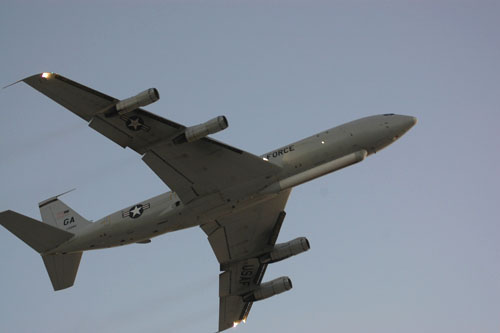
Aug. 17 airpower summary: JSTARS provide ground surveillance

An E-6B Joint Surveillance Target Attack Radar System, or JSTARS, takes to the skies, embarking on another mission into the area of responsibility. JSTARS is an airborne battle management, command and control, intelligence, surveillance and reconnaissance platform. Its primary mission is to provide theater ground and air commanders with ground surveillance to support attack operations and targeting that contributes to the delay, disruption and destruction of enemy forces.